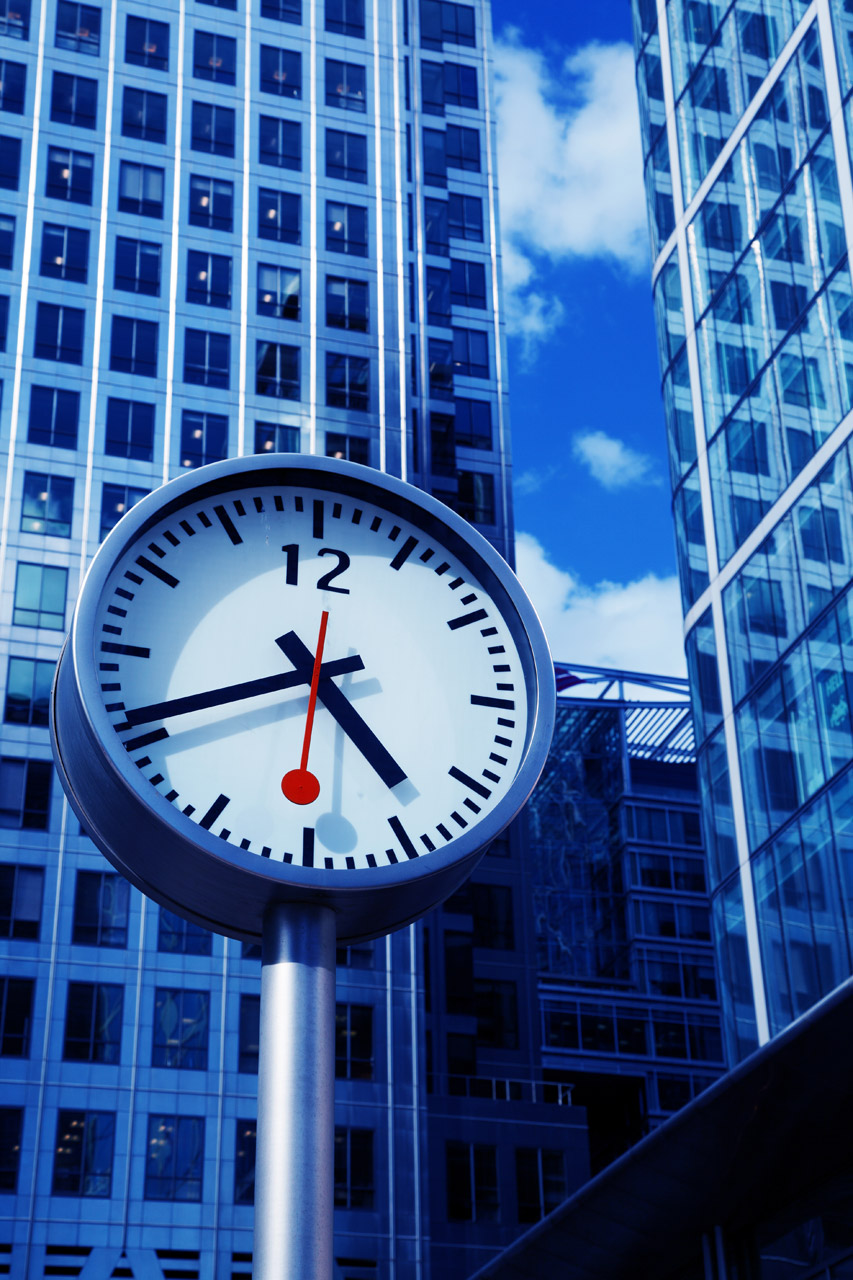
Business time

Analogue clock with skyscrapers in the background in london.